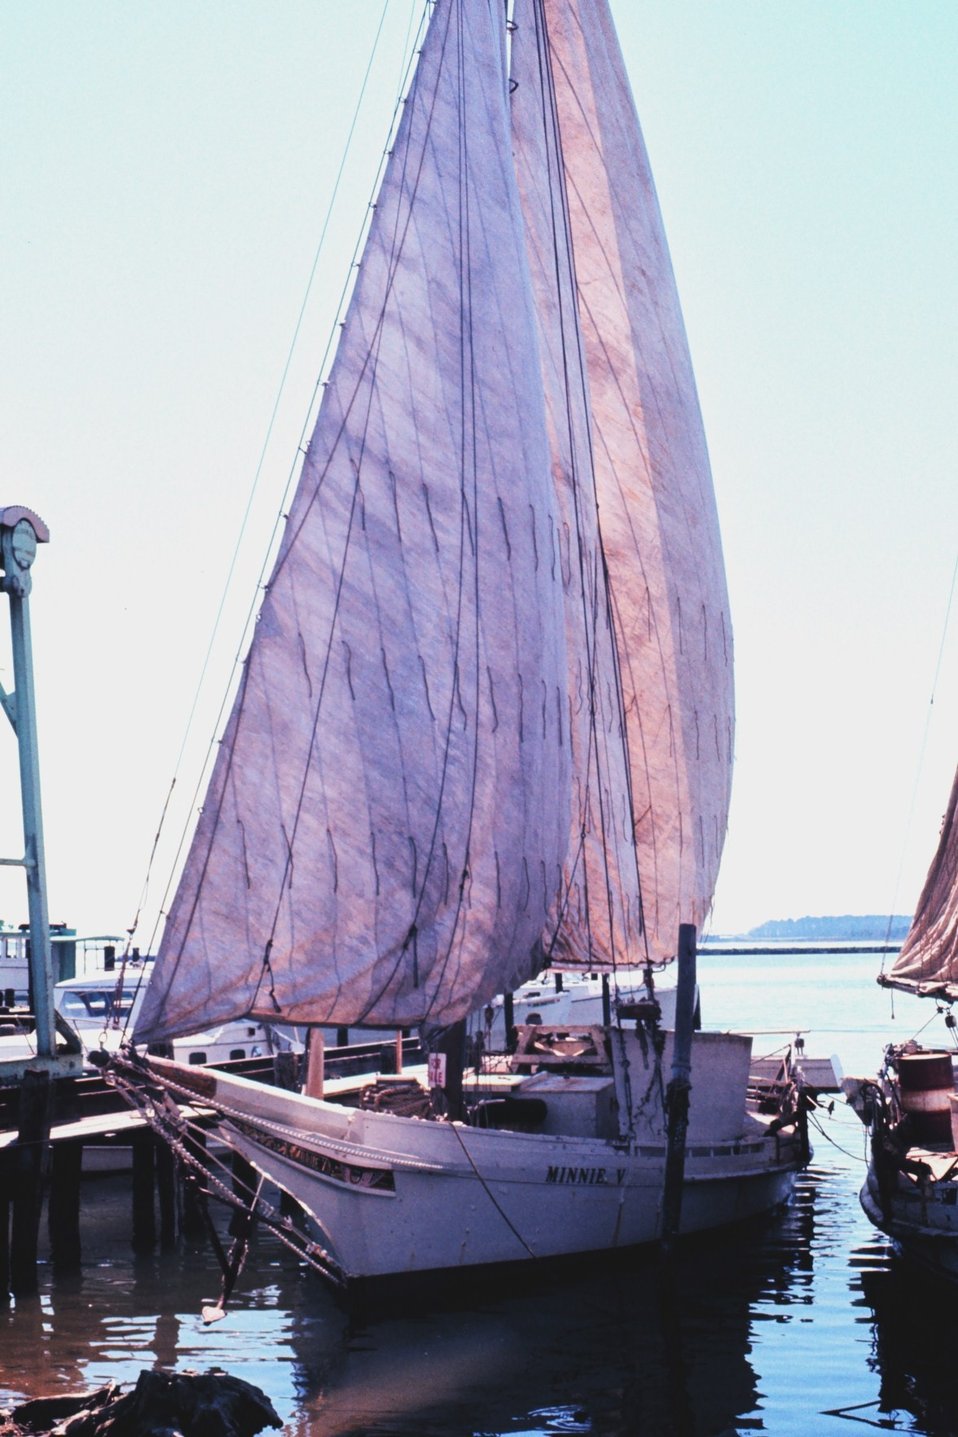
Sailing oyster dredgers drying their sails alongside the dock.